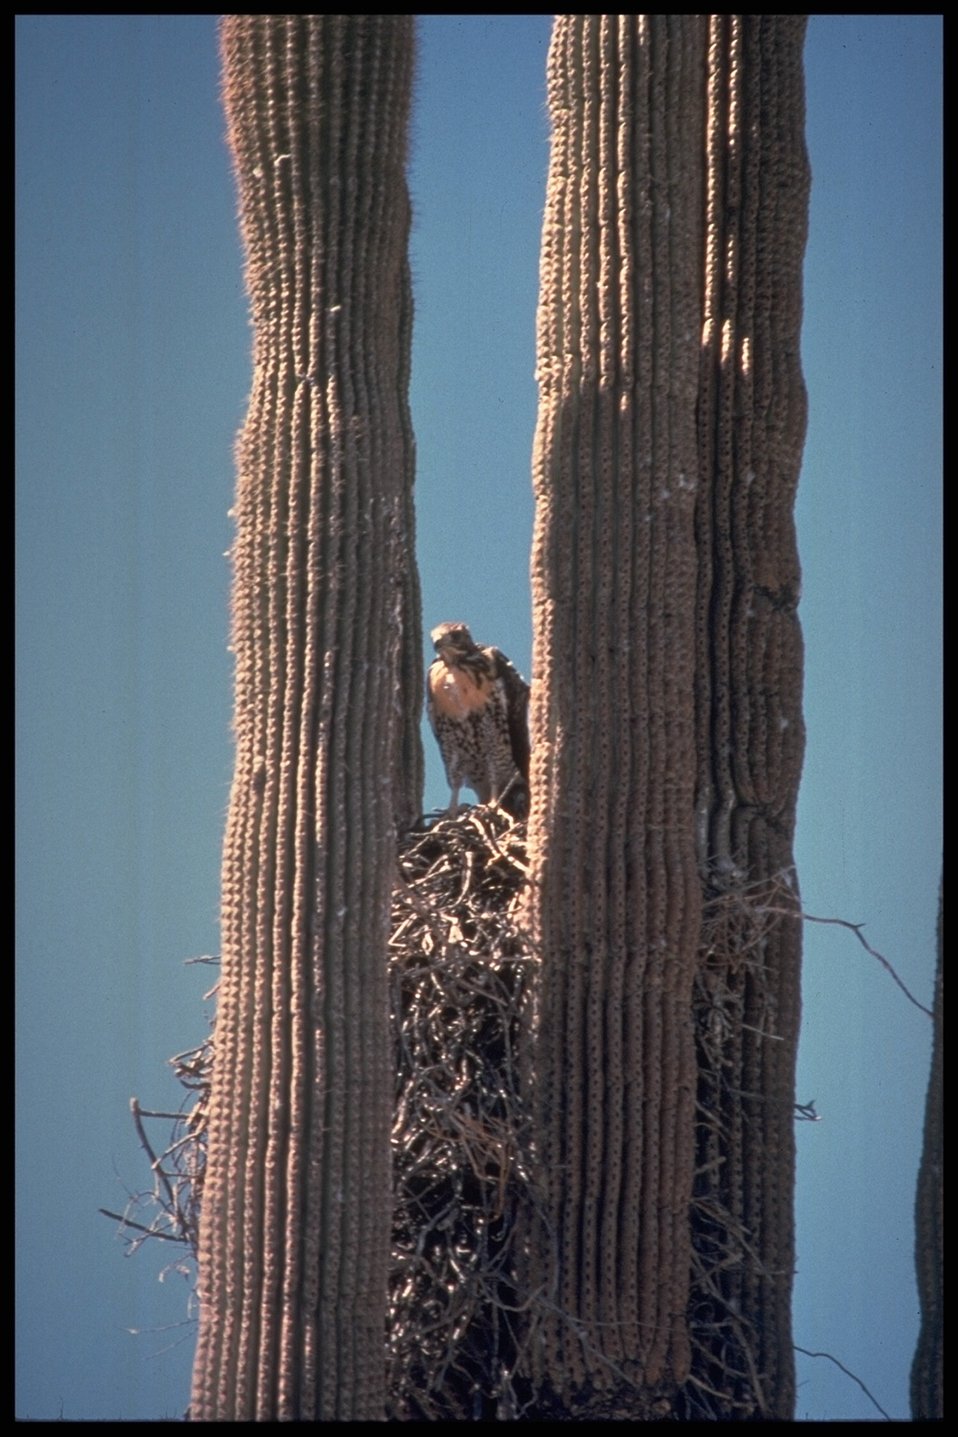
An Arizona bird of prey makes his nest in a saguaro cactus.